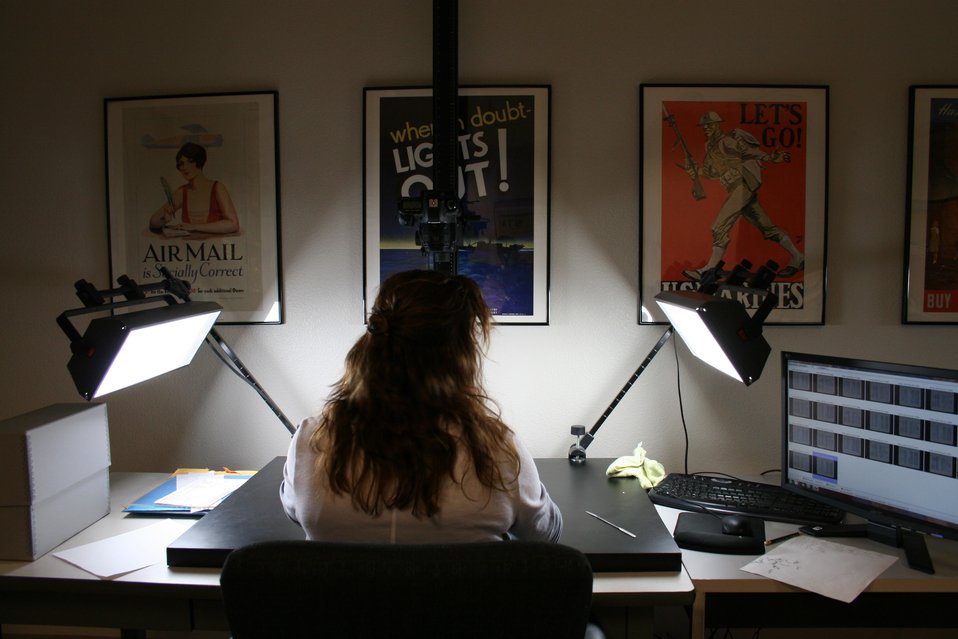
ancestry.com contractor digitizes Los Angeles Naturalization Petitions.; Location: National Archives at Riverside, Perris, CA